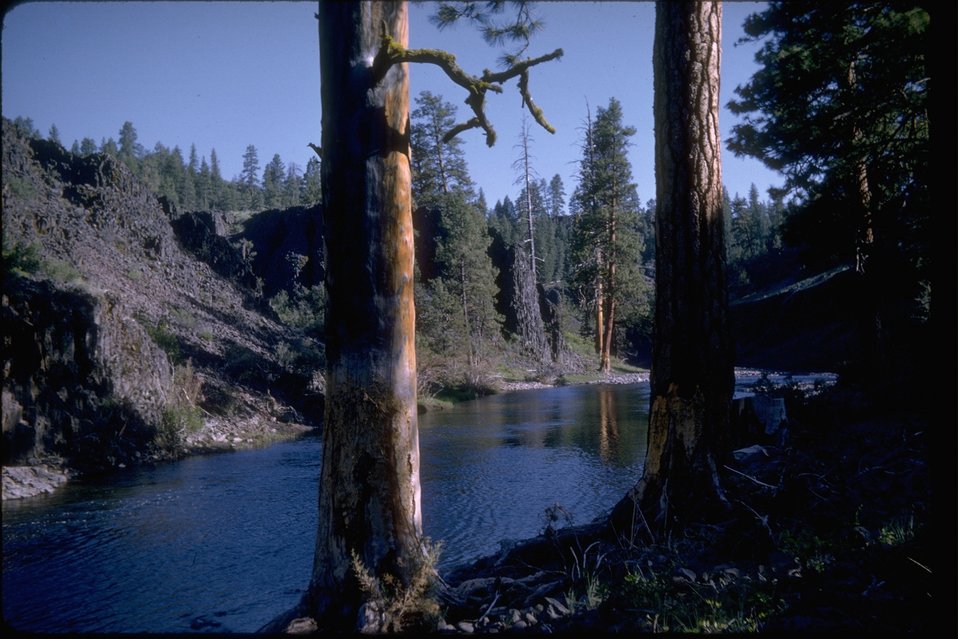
The Upper Falls Creek area on the North Fork of the Crooked River. OR 5-31